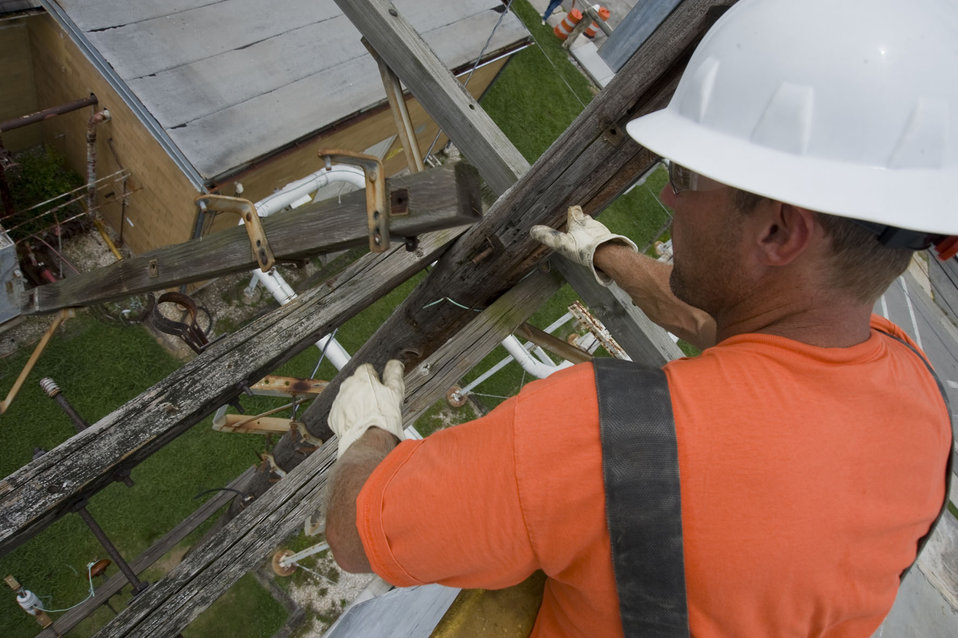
Skilled Workers Bruised by Recession Find New Start in Oak Ridge Recovery Act Work

Because Y-12 has an ongoing mission, an important part of demolition is utility rerouting to ensure vital plant operations are not disrupted. Building 9735 was surrounded by an intersection of active utility wiring and piping that made demolition of the relatively small structure (15,000 square feet) more challenging.